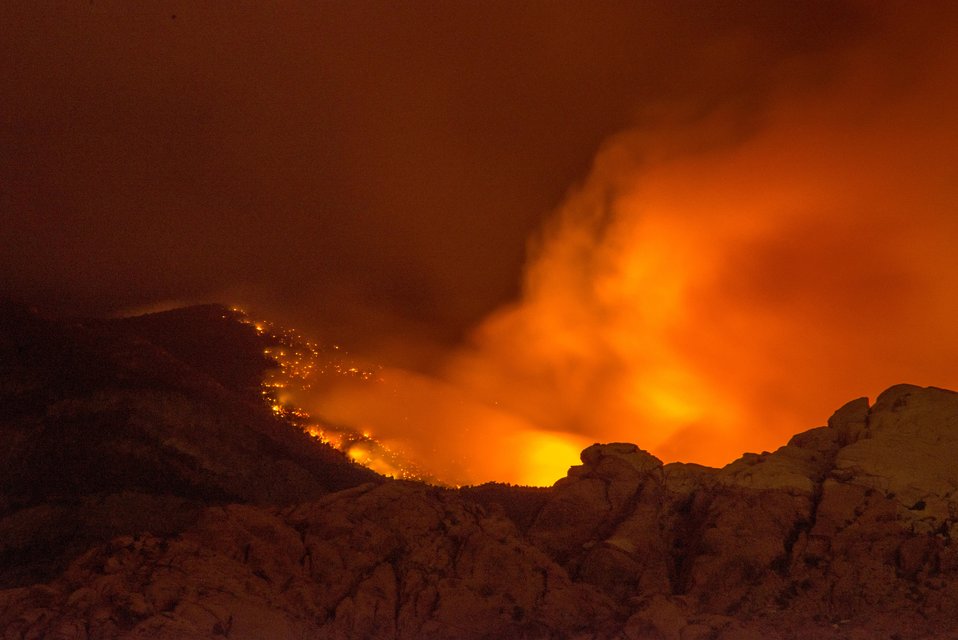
The La Madre fire is part of the Carpenter Fire in the Toiyabe National Forest near Humboldt, NV was caused by a lightning strike on Jul. 1, 2013. The fire has consumed nearly 27,881acres and is presently 70% contained.